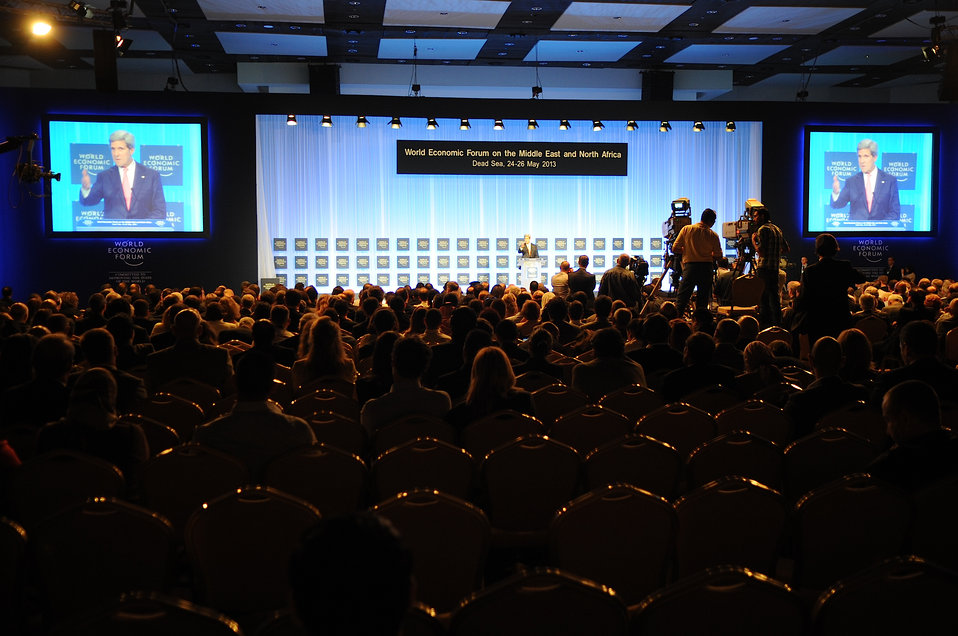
Secretary Kerry Attends the World Economic Forum

U.S. Secretary of State John Kerry addresses the closing plenary session of the World Economic Forum meeting in Dead Sea, Jordan, on May 26, 2013.